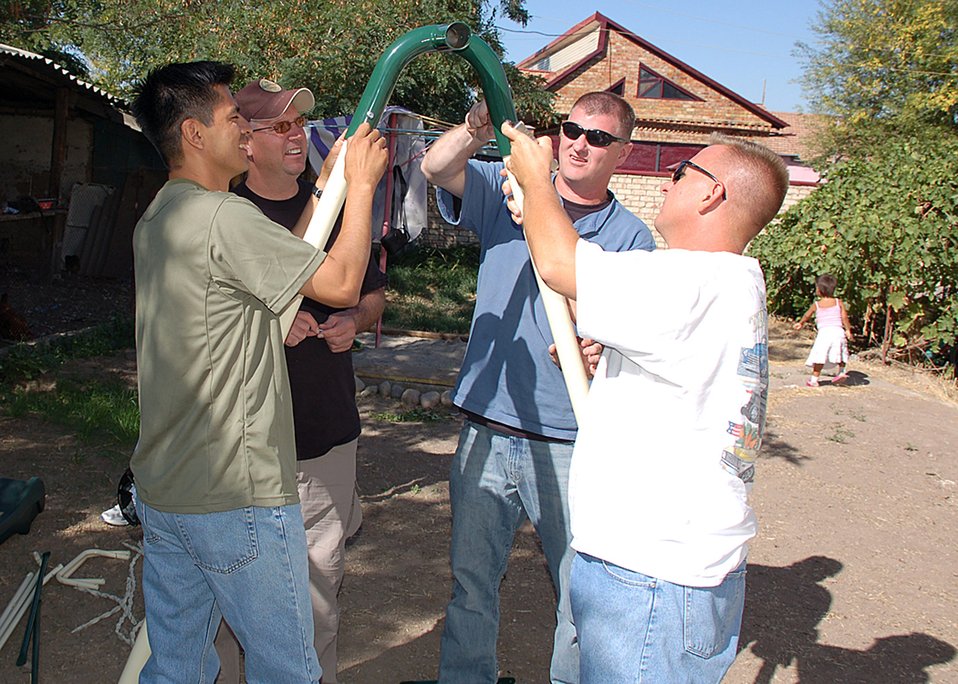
Manas Top 3 Council swings into action in Kyrgyzstan

Tech. Sgt. Lusero Rodriguez, Master Sgt. James Baker and Master Sgt. Terrence Wren along with Tech. Sgt. Charles Williams work together to assemble a swing set for the Umut-Nadjeshda Children's Rehabilitation Center Aug. 20 in Bishkek, Kyrgyzstan. Sergeants Rodriguez, Baker and Wren are assigned to the all from the 376th Expeditionary Aircraft Maintenance Squadron and Sergeant Williams works at the 376th Expeditionary Civil Engineer Squadron, all members of the Top Three Council from Manas Air Base, Kyrgyzstan.